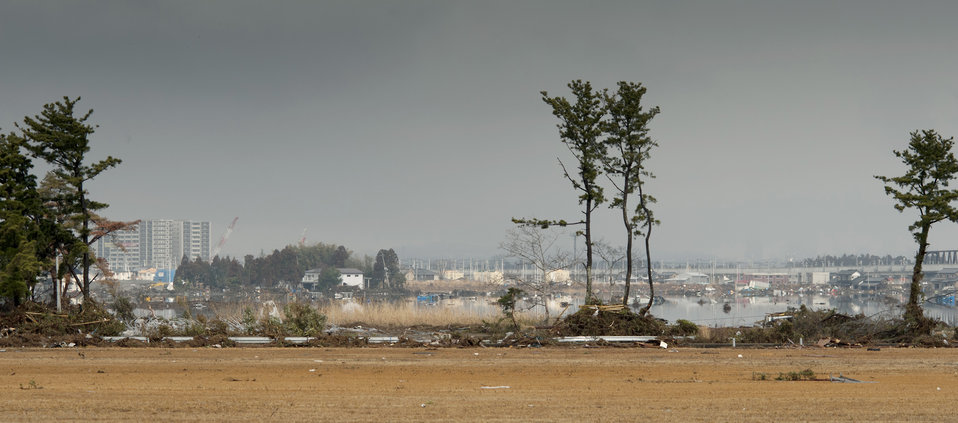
Headline

Debris covers the shores and low-lying ground around Sendai Airport, Japan, March 16, 2011. Members of the 320th Special Tactics Squadron from Kadena Air Base, Japan, deployed to Sendai Airport to help clear the runway and make it ready for fixed-wing aircraft traffic.